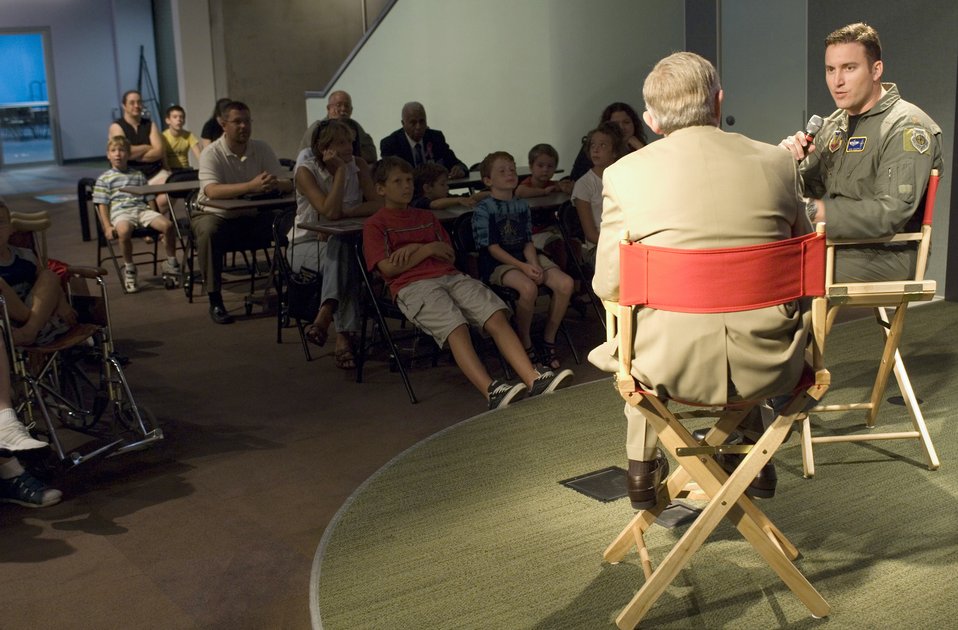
Focus on flight

Maj. Robert Novotney, the